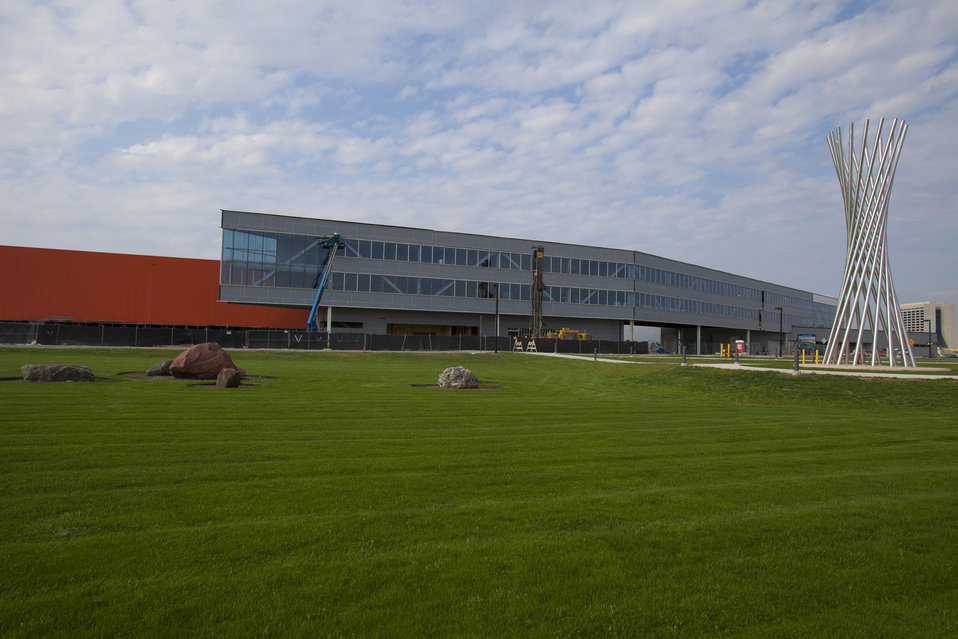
Construction of the Illinois Accelerator Research Center (IARC) Office, Technical and Education Building.

The IARC is a new accelerator research facility being built at Fermi National Accelerator Laboratory. It will provide a state-of-the-art facility for research, development and industrialization of particle accelerator technology. It will develop partnerships with private industry for the commercial and industrial application of accelerator technology for energy and the environment, medicine, industry, national security and discovery science.